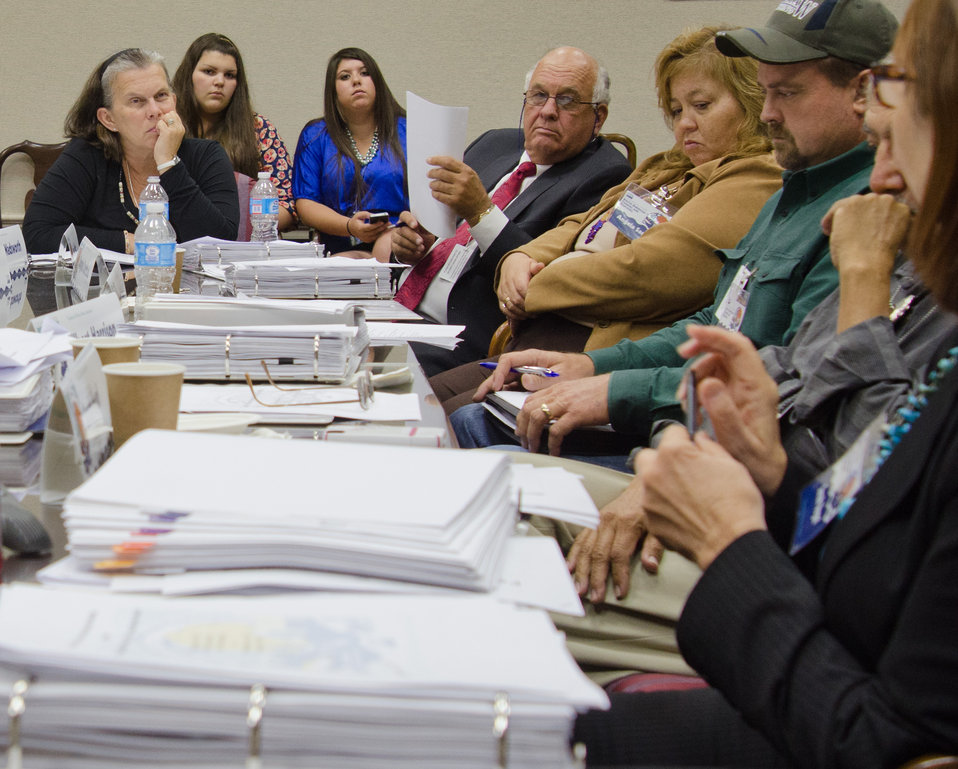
USDA Senior Advisor to the Secretary for Tribal Relations Janie Simms Hipp (left) of the Chickasaw Nation, and others listen closely to what Civil Rights Attorney and former Agricultural Commissioner for North Dakota Sarah Vogel (far right), Bismarck, N.D. is saying, during the first administrative/training meeting of the U.S. Department of Agriculture's (USDA) Council for Native American Farming and Ranching (CNAFR) held on Monday, Aug. 13, 2012 at the USDA headquarters Whitten Building, in Washington, D.C. CNAFR was created to advise the Secretary on ways to eliminate barriers to participation for Native American Farmers and Ranchers in USDA programs. The Council was established as part of the Keepseagle settlement, and is conducted under the oversight of USDA's Office of Tribal Relations, which is part of the Office of the Secretary of Agriculture. The Director of Tribal Relations Joanna Mounce Stancil serves as Designated Federal Official (DFO) for the Council.